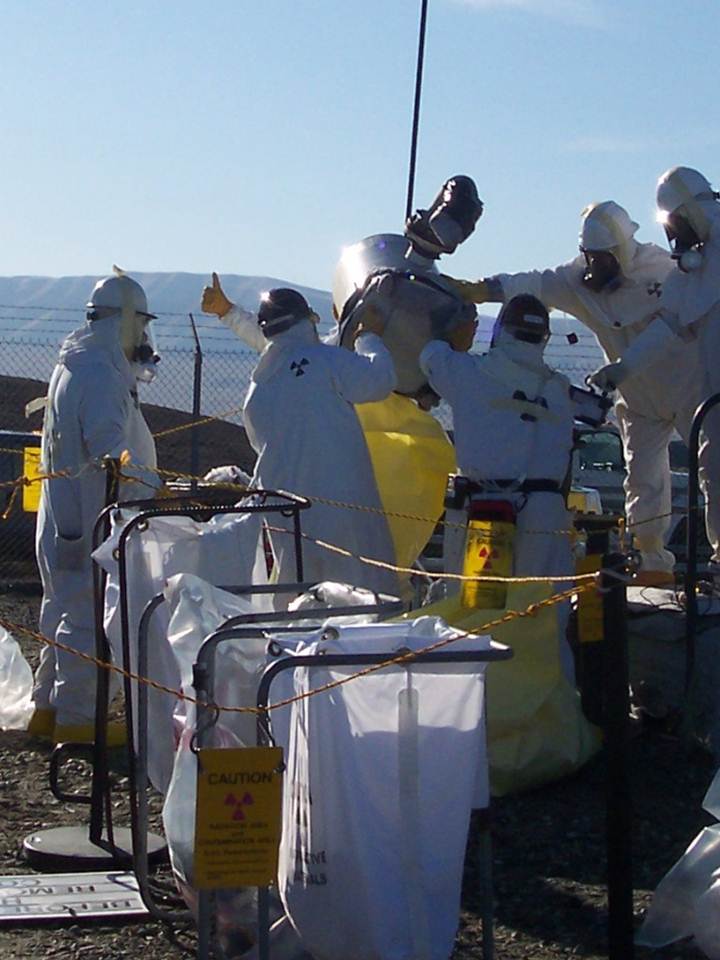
ORP Single-shell tank filters

Workers change out the last of the obsolete filters. The replacement filters trap stray particles of contamination and reduce the risk of worker exposure.